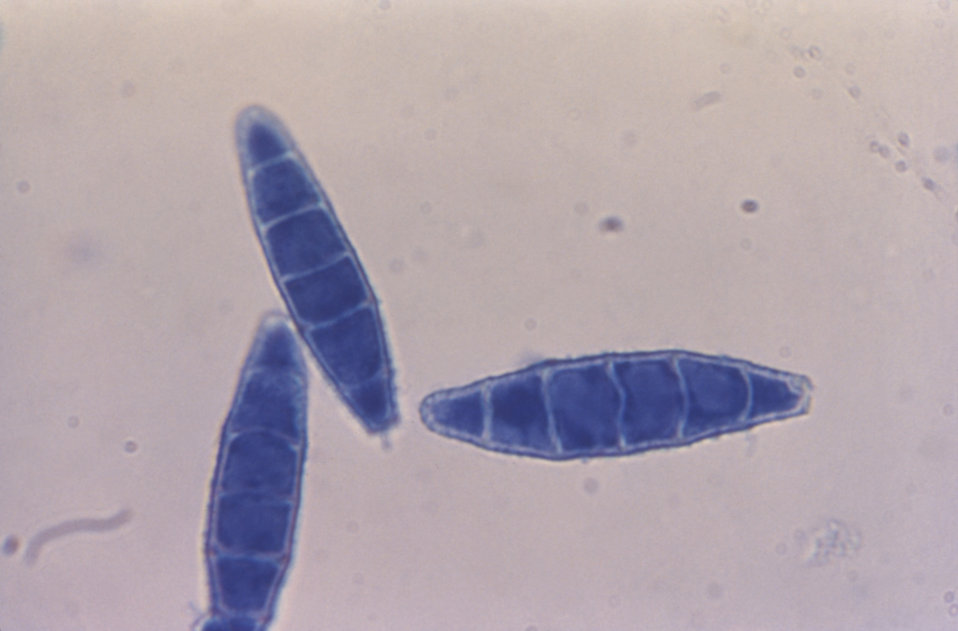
This photomicrograph shows the spindle-shaped macroconidia of the fungus Microsporum gypseum.